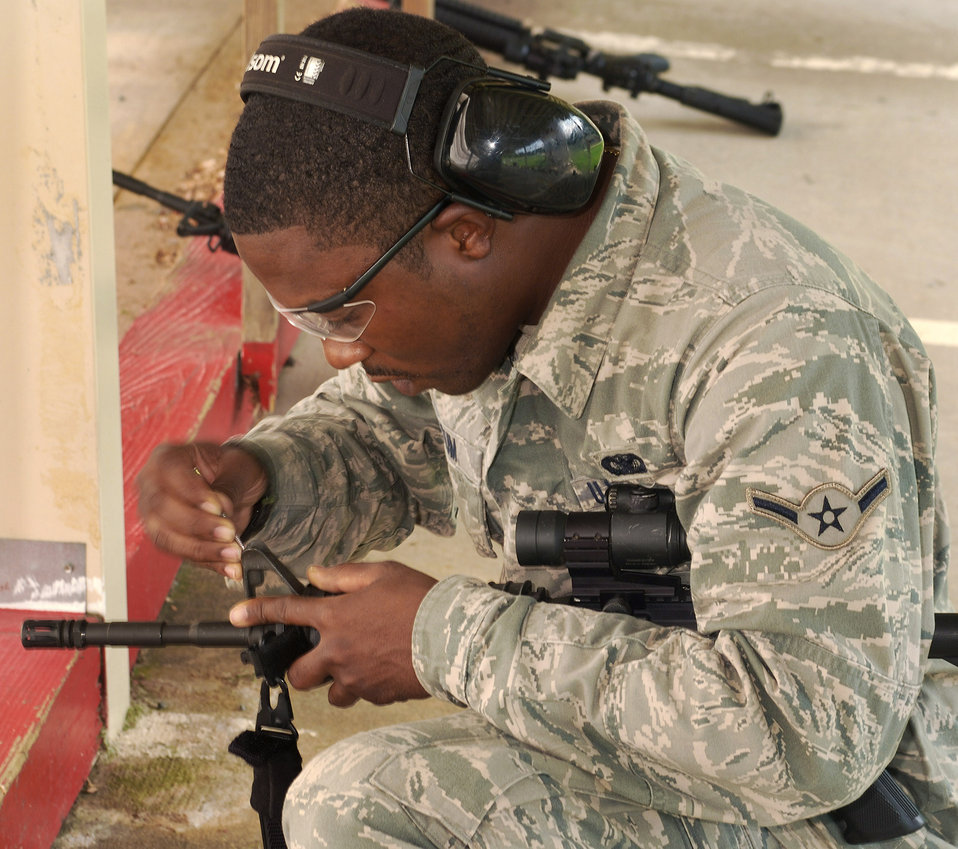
Sight-seeing

Senior Airman Derrick Clark makes sight corrections on an M-4 carbine July 9, 2011, during training at Dobbins Air Reserve Base, Ga. Clark is assigned to the Air Force Reserve's 94th Security Forces Squadron.